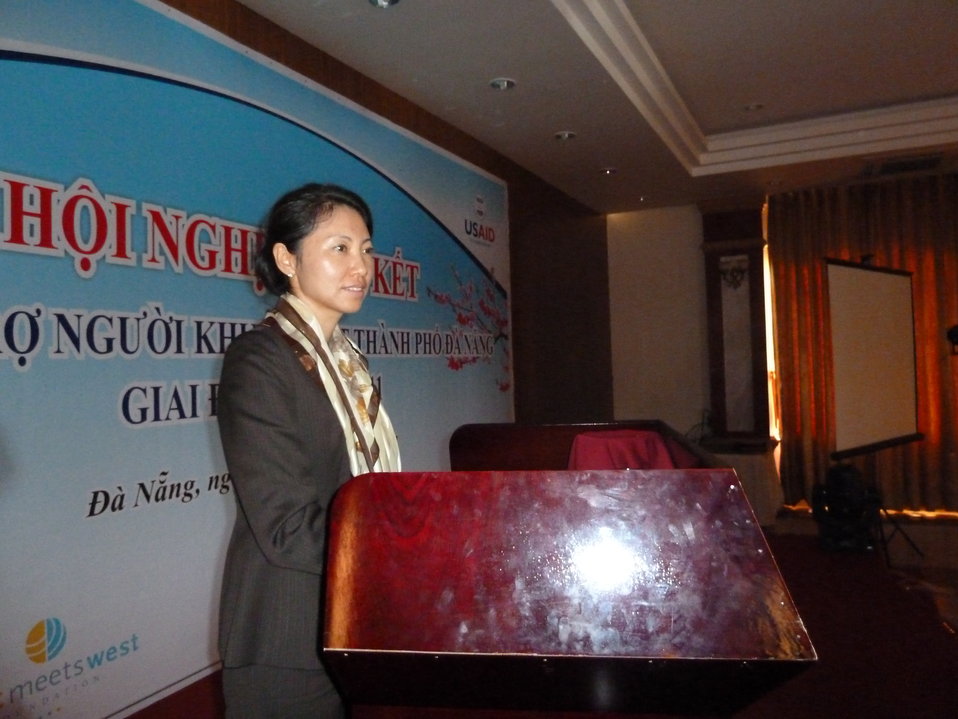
Danang Disability Workshop

Close out workshop of three-year USAID program in disabilities, Danang